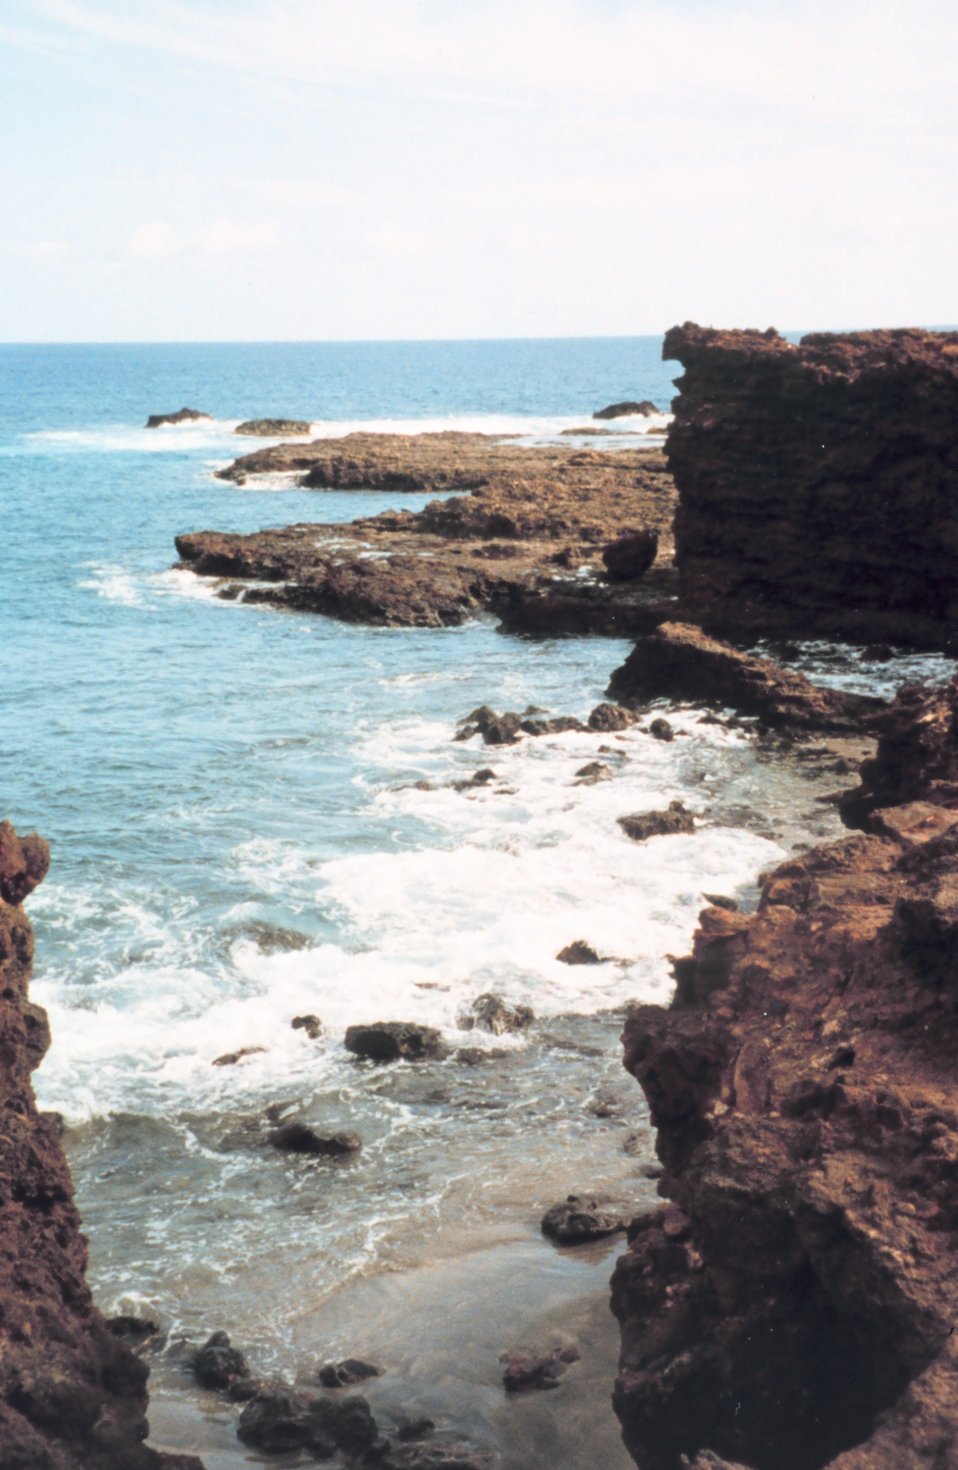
Sharp hard rocky shoreline